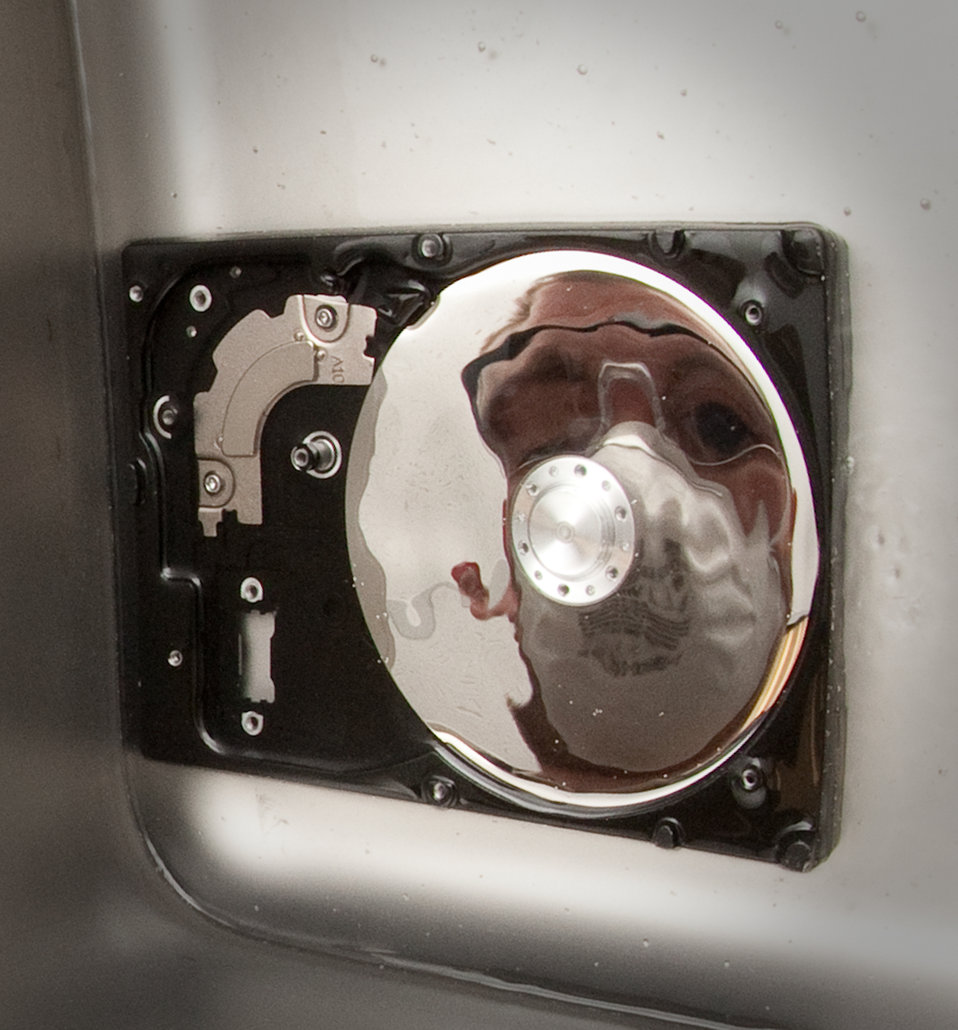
A close look at DoD Cyber Crime Center

Scott Lalliss's reflection is seen on the platen disk of a hard drive being cleaned in a sonic cleaner with 91 percent alcohol solution at the Defense Computer Forensic Laboratory Sept. 9, 2010, in Linthicum, Md. The 9 percent of water in the solution develop bubbles that gently move dirt and other organic matter away from the disks that may contain valuable evidence in an investigation. Mr. Lalliss is a senior forensic technician.